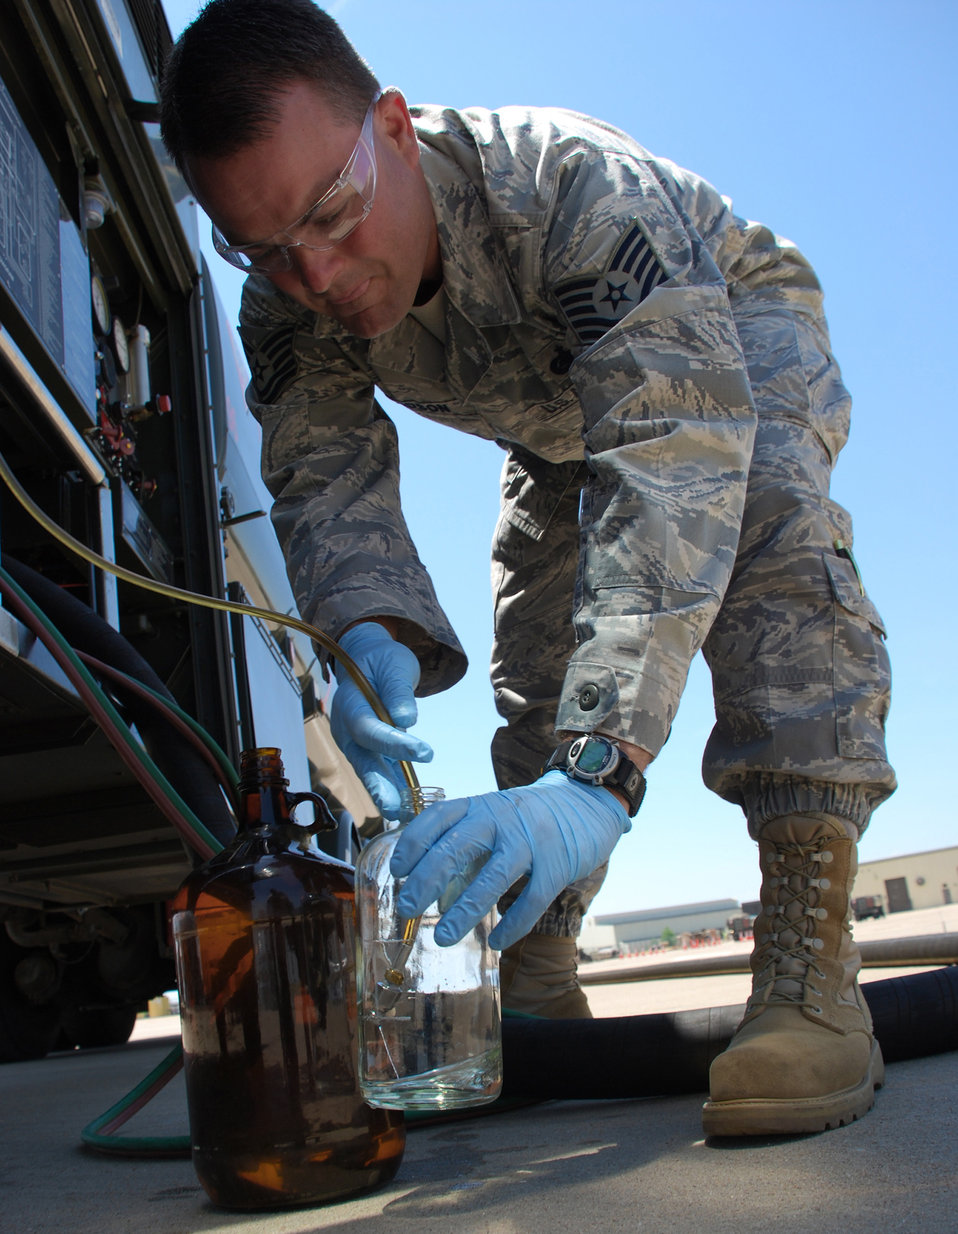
Air Force officials test new constant pressure fuel structure

Tech. Sgt. Randy Davidson collects samples of a 50-50 blend of synthetic and JP-8 fuels at the 364th Training Squadron's fuels training yard May 21 at Sheppard Air Force Base, Texas. Sergeant Davidson is part of an Air Force Petroleum Agency team that will conduct tests on the base's Type 3 hydrant system as part of the service's synthetic fuel certification process. The tests should be completed in late October or early November.